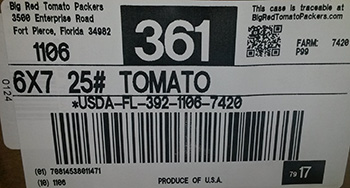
RECALLED – Tomatoes

February 7, 2014 – Product Recall – Big Red Tomato Packers, LLC Voluntarily Recalls Fresh Tomatoes Due to Possible Risk of Contamination from Salmonella.